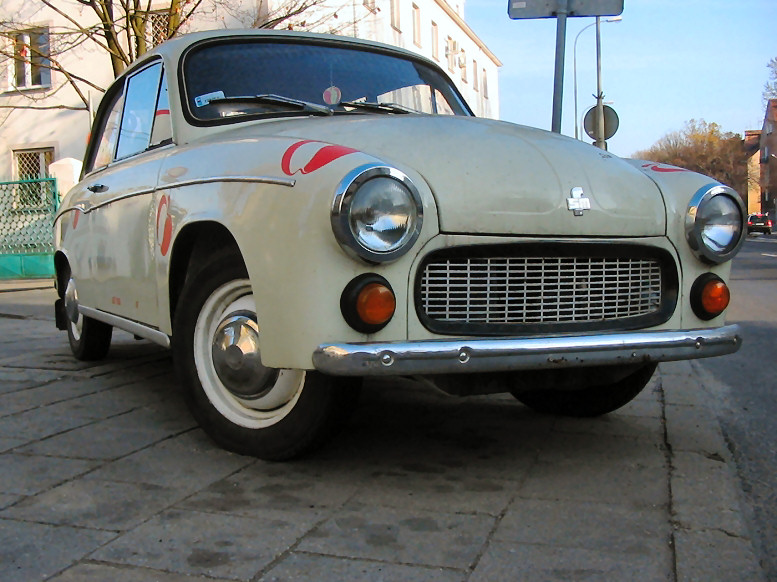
105przod